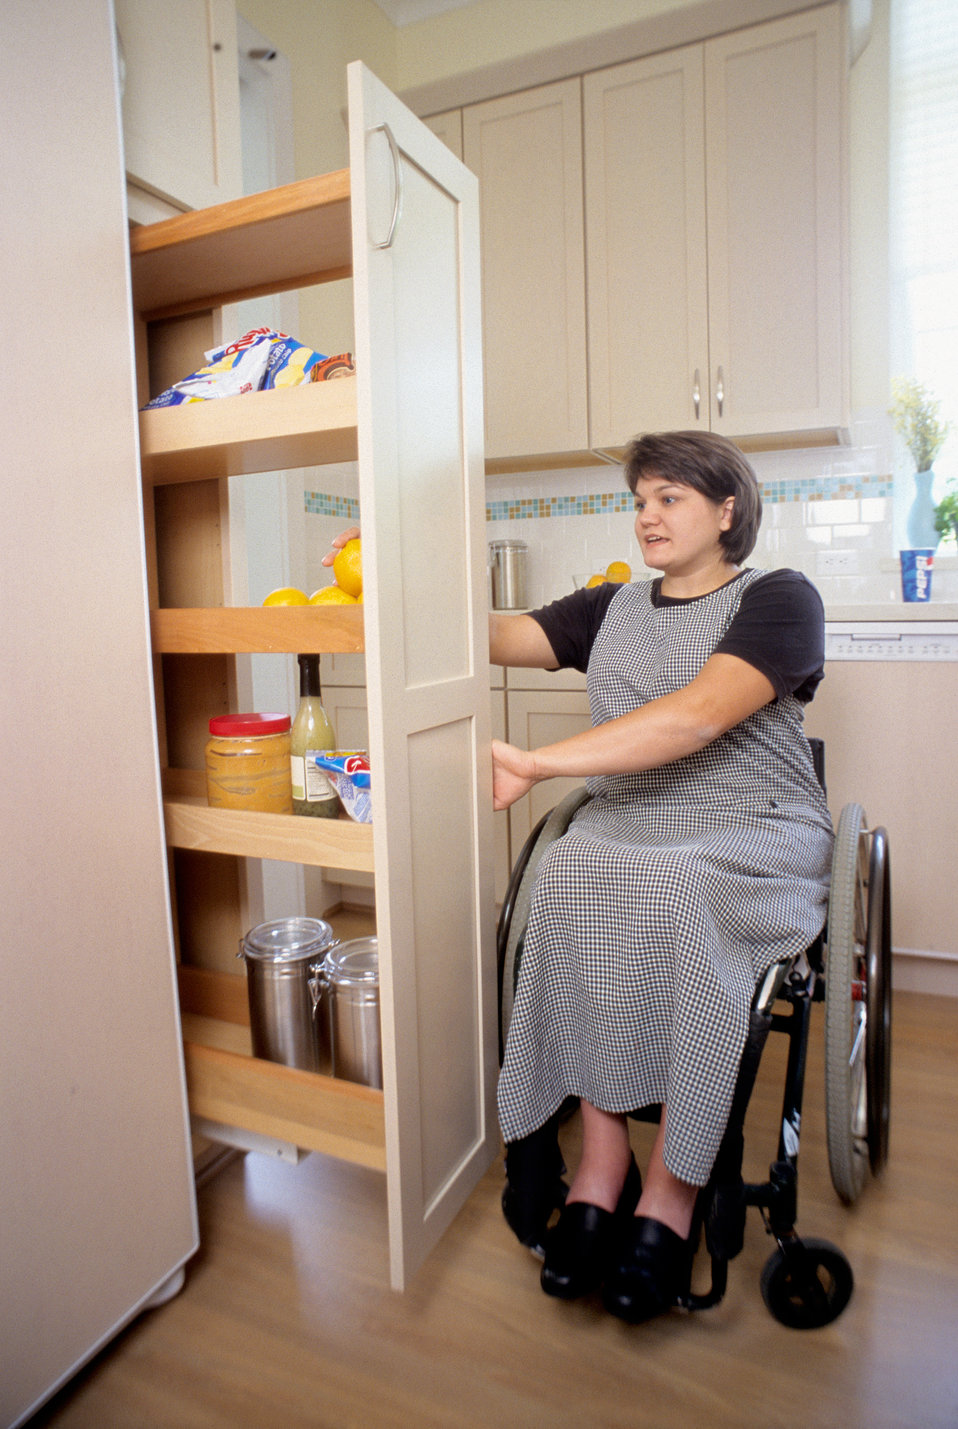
While seated in her wheelchair, in this 2000 image, an adult woman was shown as he was navigating the contents of a kitchen situated 'pull-out' pantry, in order to illustrate how the installation had made kitchen tasks much easier for a wider range of users, whether they were handicapped, or unimpaired. Using pantry shelving, which could be pulled out toward the user, was easier for many, for it did not require awkward bending and reaching back into deep spaces, as is the case with many fixed-shelf closet pantries. In this three-image example (See PHIL 9309, and 9310), the entire cabinet rolled out to accommodate different reach-ranges, including a standing adult man, this adult woman using a wheelchair, and several child siblings.'Part of the College of Design at North Carolina State University (NCSU), Raleigh, NC, the Center promotes the concept of universal design in all design, construction, and manufacturing disciplines through research, design assistance, and training.